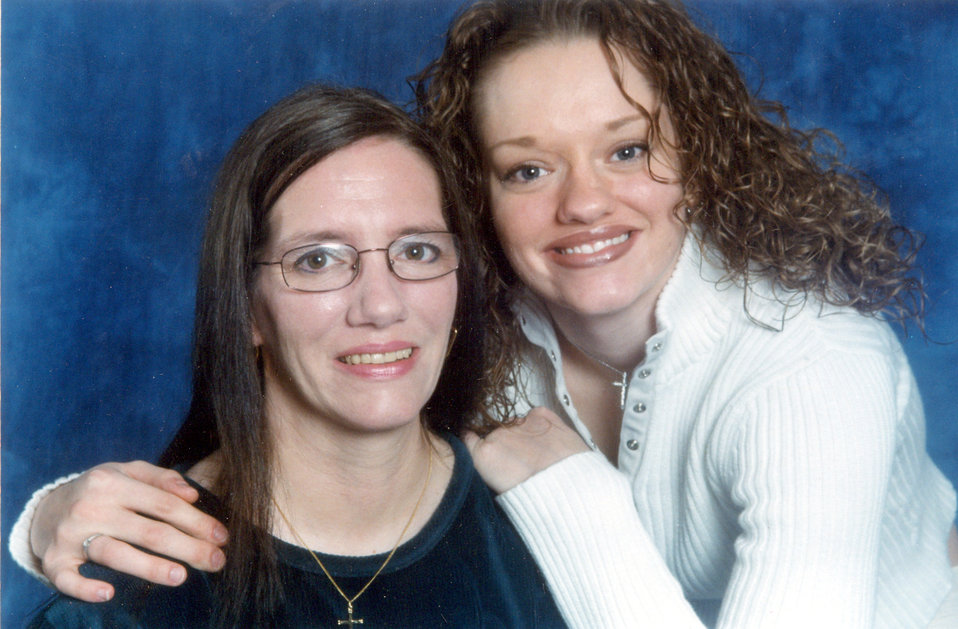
A mother's dream

AVIANO AIR BASE, Italy -- Juanita Heismann (left) and her daughter, April Turner, were reunited here recently. Ms. Turner went missing in 1988 at age 7.